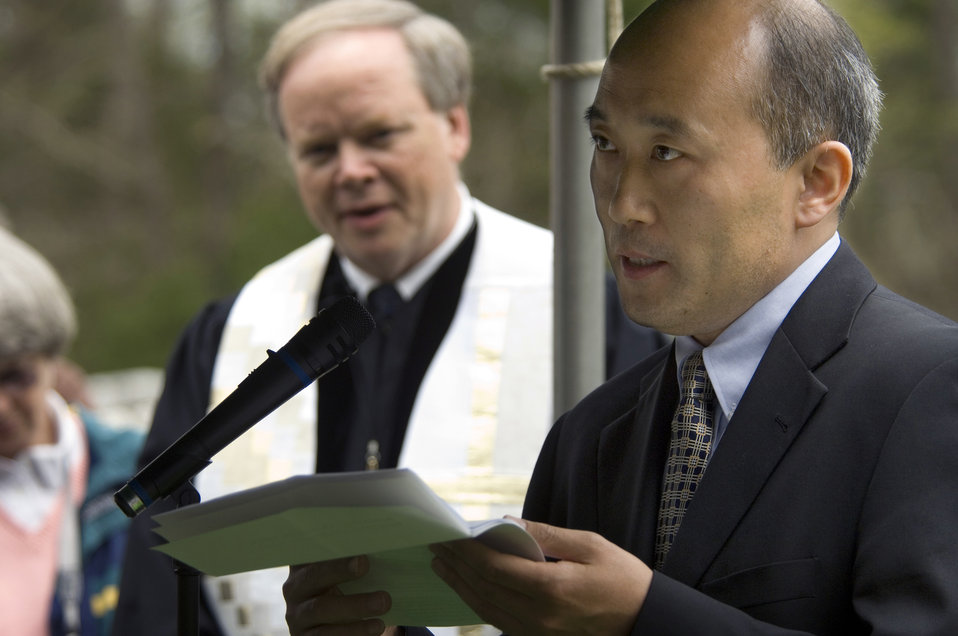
Pilot burial solves two mysteries

Jia Xiudong, representing the Chinese Embassy in Washington, D.C., reads a letter from Huang Renzhun during memorial services for 2nd Lt. Robert Hoyle Upchurch on Saturday, April 8, 2006. Lieutenant Upchurch was a member of the famed Flying Tigers during World War II and was listed as missing in action until his remains were identified last May by the Joint POW/MIA Accounting Command. In his letter, Mr. Huang tells how, as a young boy, he remembered the body of an American pilot being recovered and given a ceremonial burial in the village of Guidong, Hunan Province. The villagers maintained the burial site more than 60 years until Lieutenant Upchurch's remains were returned to the U.S.